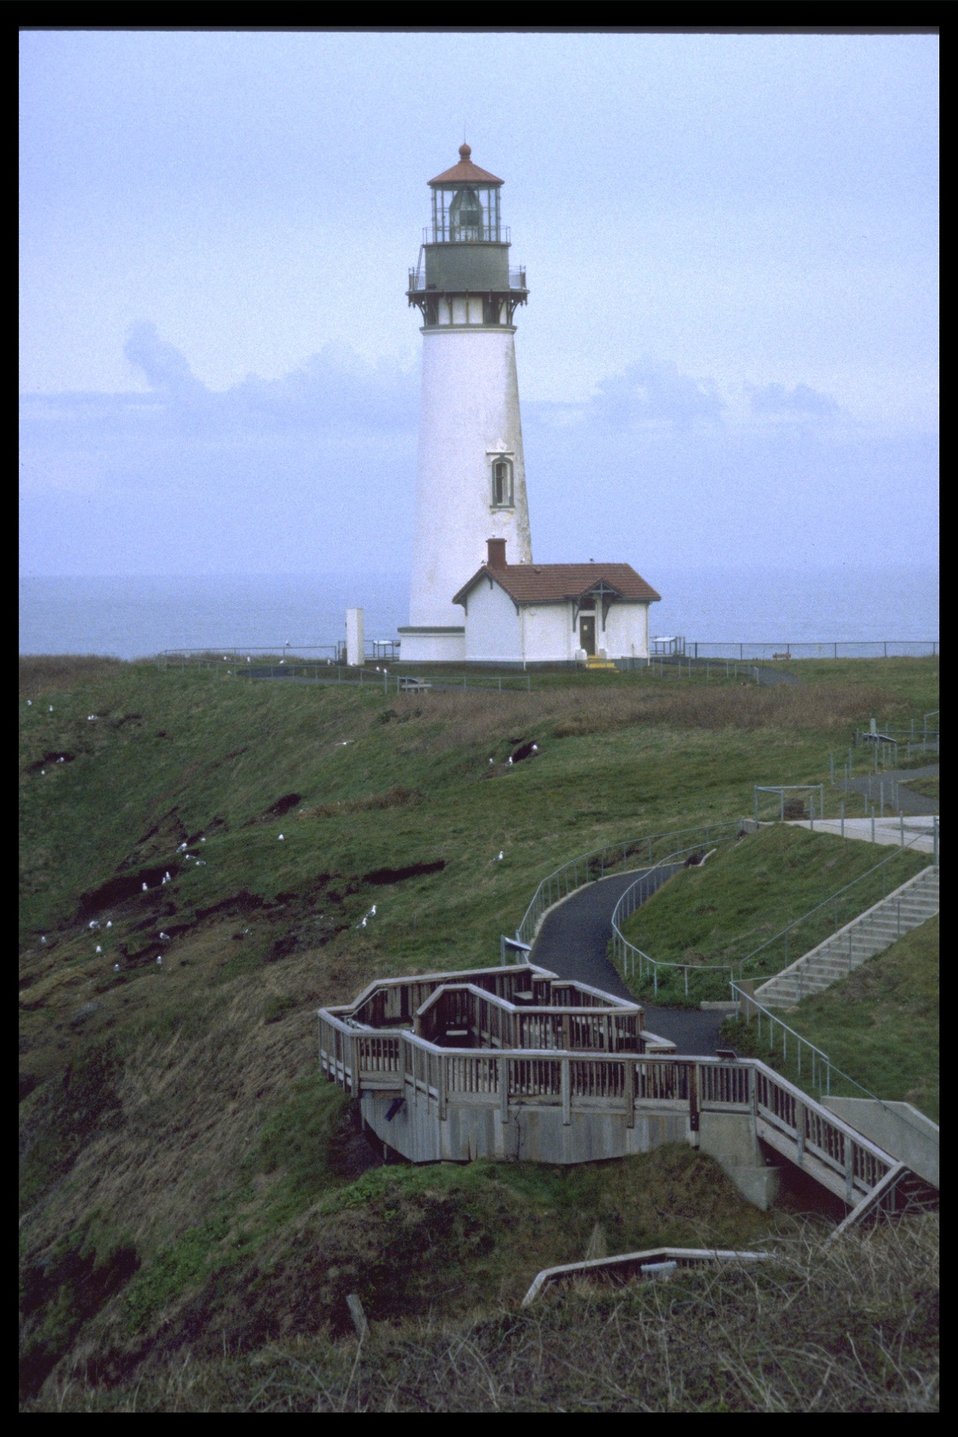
Yaquina Head Lighthouse.